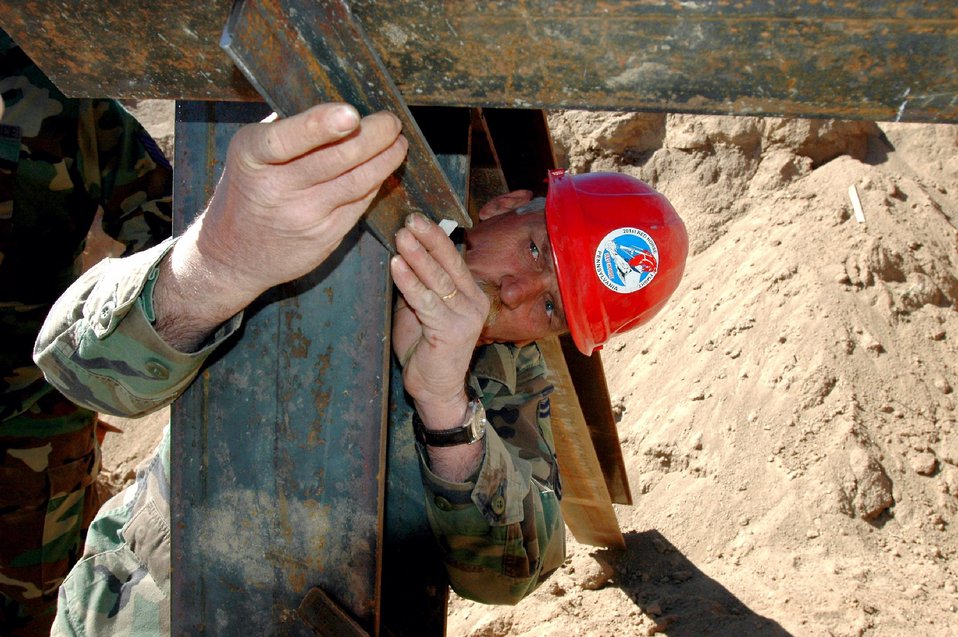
RED HORSE members make difference on the border

Senior Master Sgt. Larry Boyer checks to make sure this I-beam is secured safely before puts the finishing touches on a firing range that will be used by Border Patrol officers to hone in their skills May 1 near Campo, Calif. Sergeant Boyer is a member of the 201st RED HORSE Squadron from Fort Indiantown Gap, Pa.